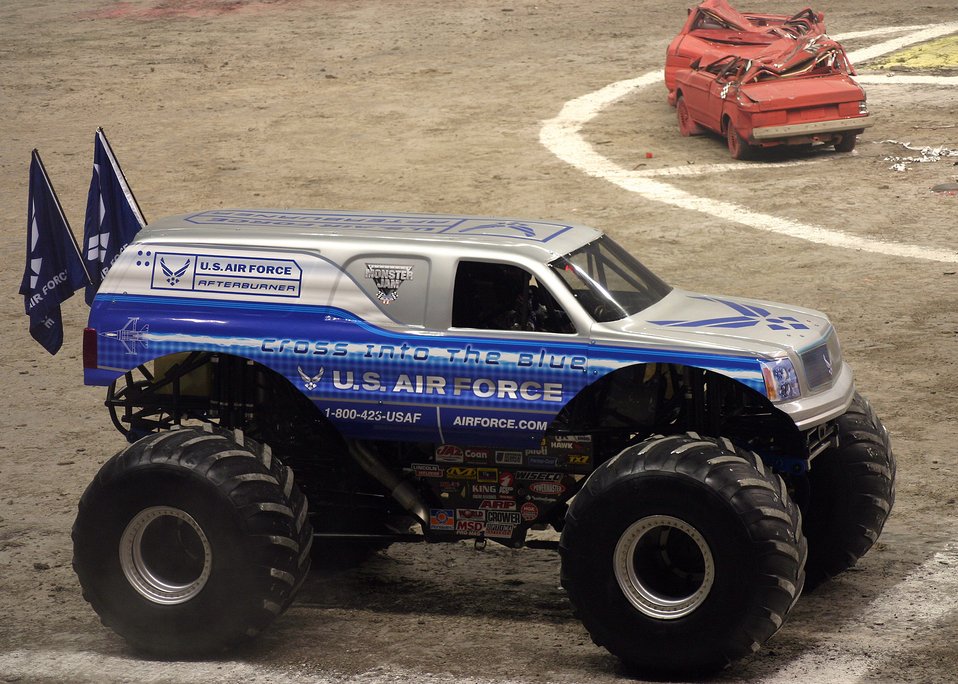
Afterburner flies high in Monster Jam

The Air Force Afterburner, driven by Damon Bradshaw, competes in the freestyle competition Jan. 10 at the Alamodome in San Antonio during the 2009 Monster Jam. Mr. Bradshaw and Afterburner placed second in the event.